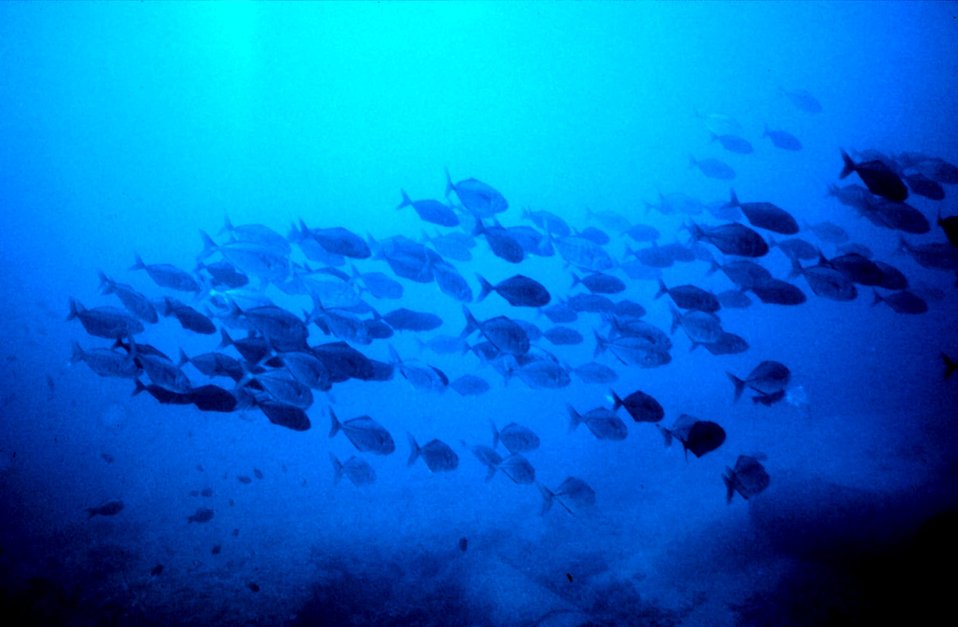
School of jacks -Carangids in deep water.